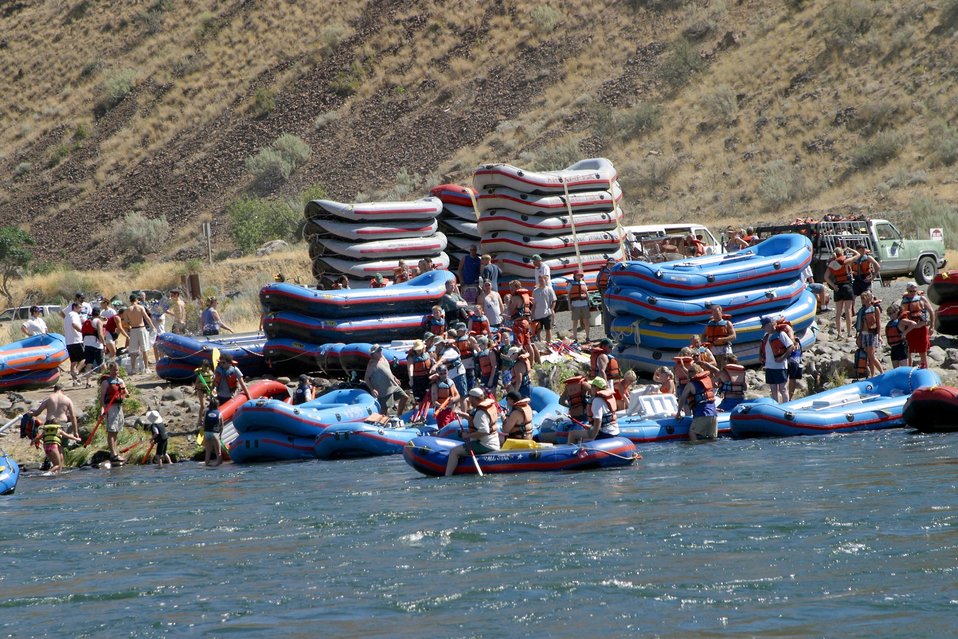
Over 200,000 people a year float the Lower Deshutes River.